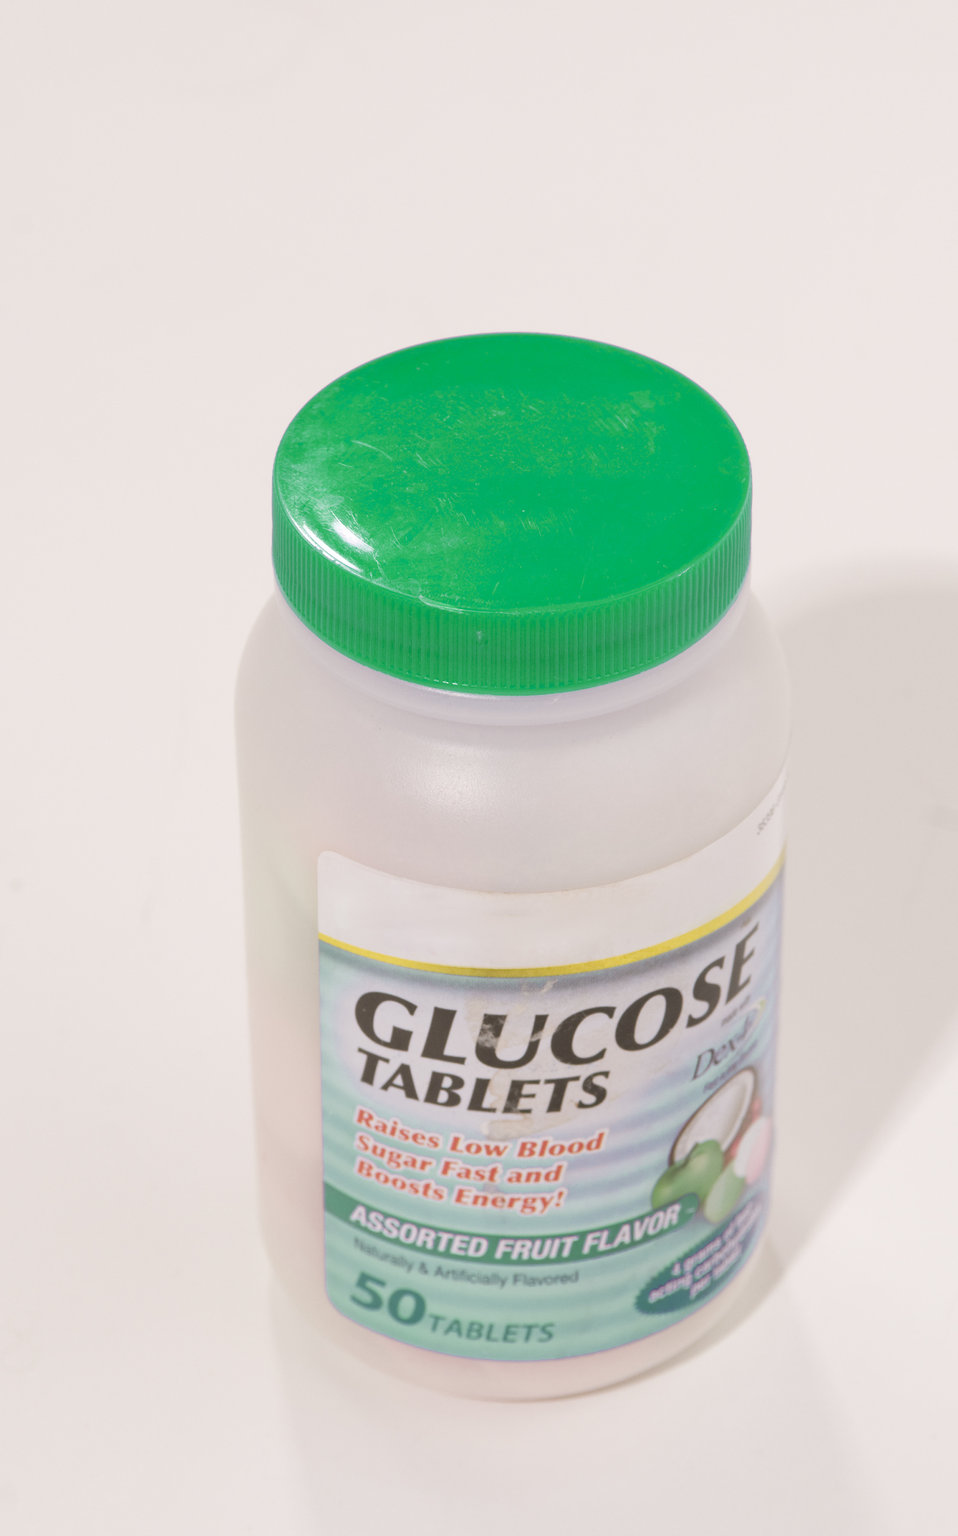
This image depicts a medication bottle containing glucose tablets.